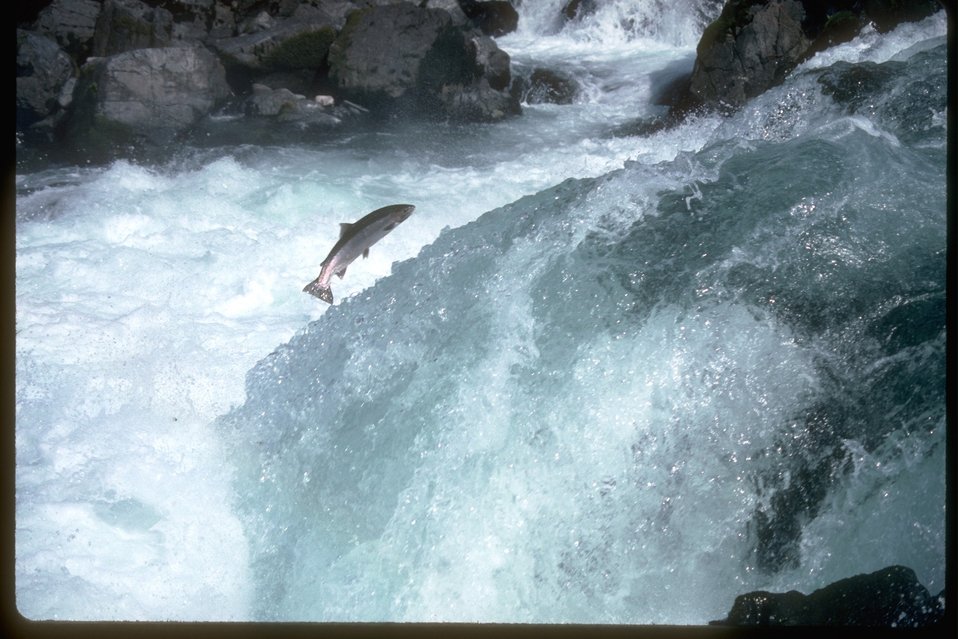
Summer Steelhead on the North Umpqua River.